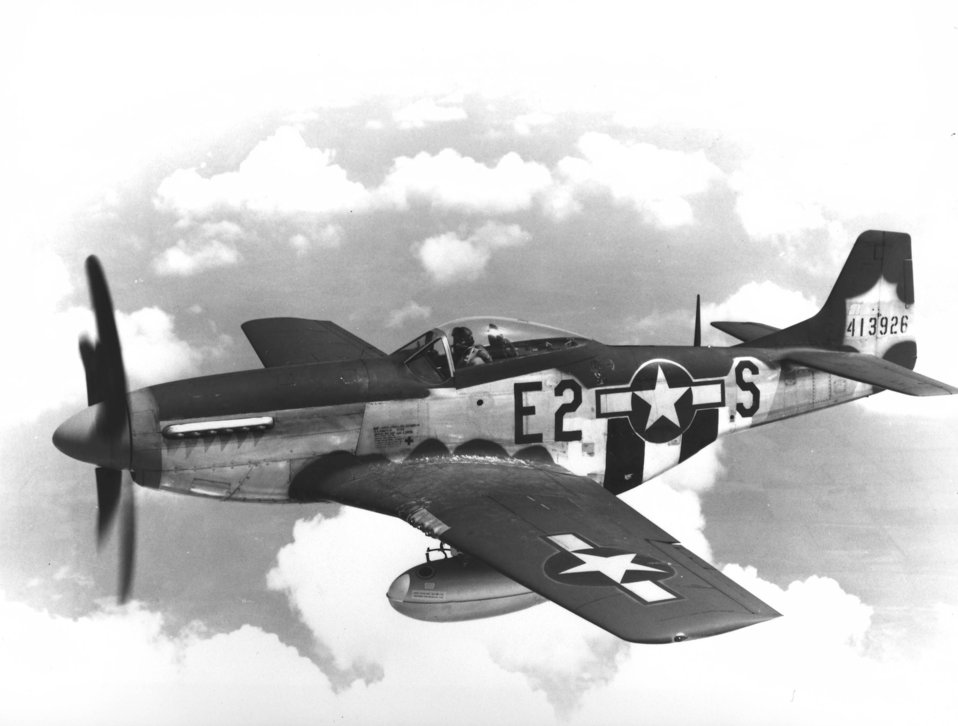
P-51 Mustang

1940's -- North American P-51 Mustang figher plane over France. Mustangs served in nearly every combat zone. P-51s had destroyed 4,950 enemy aircraft in the air, more than any other fighter in Europe. Also used for photo recon and ground support use due to its limited high-altitude performance.